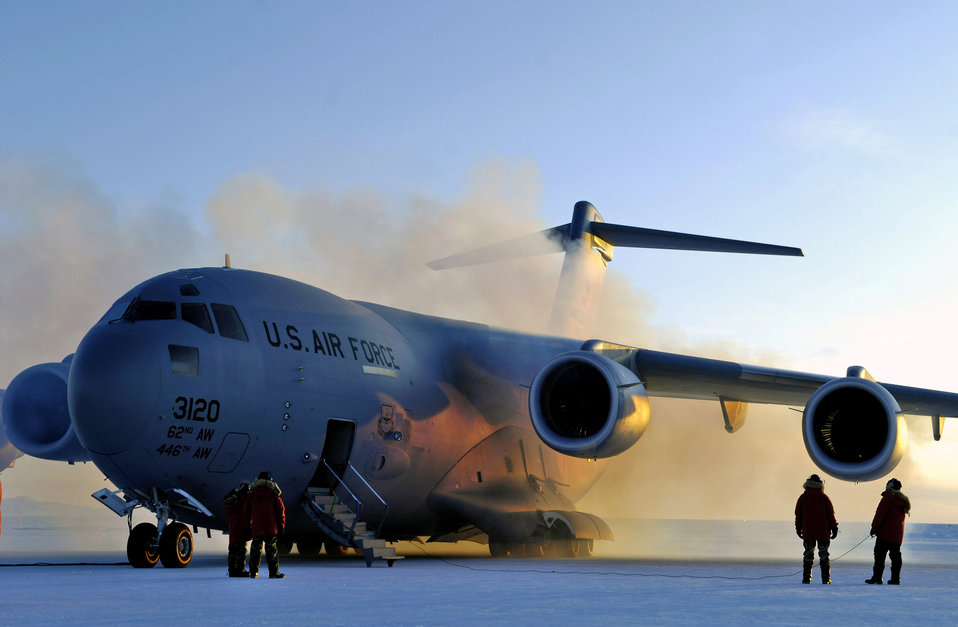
Ice and vapors

Exhaust vapors form around a C-17 Globemaster III after engine start-up during an Operation Deep Freeze winter fly-in mission Aug. 25 at Pegasus White Ice Runway, Antarctica.